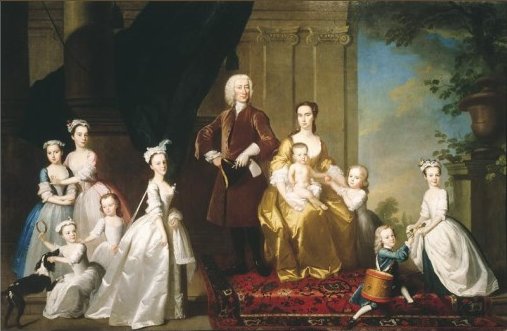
'The Radcliffe Family', painting by Thomas Hudson, ca. 1742, Denver Art Museum